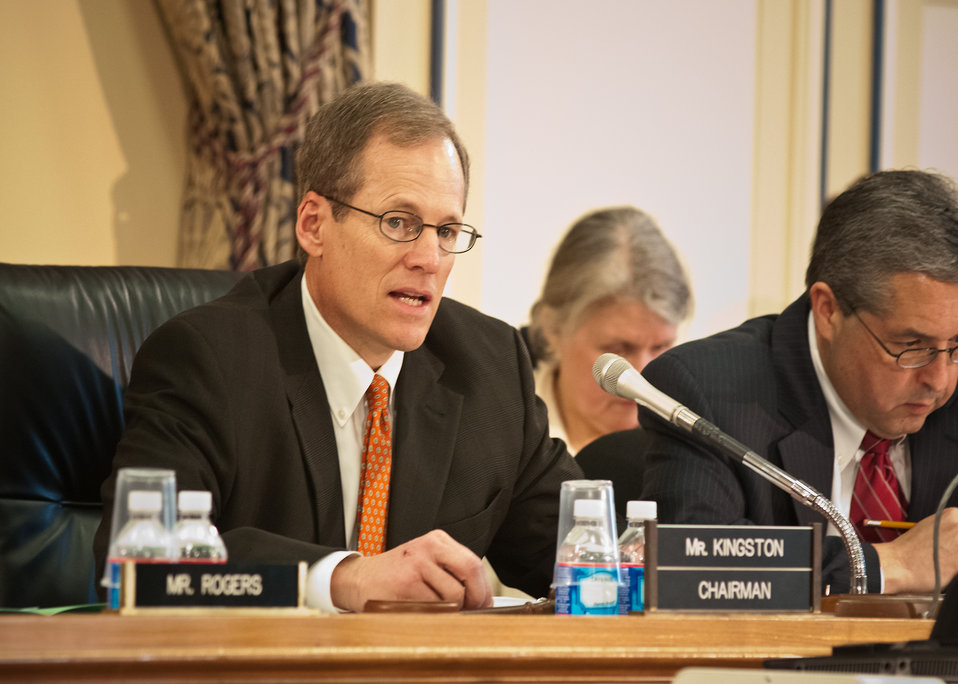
Congressman Jack Kingston, Georgia, Chairman of the House Agriculture Appropriations Committee welcomes Agriculture Secretary Tom Vilsack, Dr. Kathleen Merrigan, Deputy Secretary, Dr. Joseph Glauber and Chief Economist and Michael Young Budget Officer prior to discussing the United States Department of Agriculture budget in the Rayburn House Office Building on Friday, February 17, 2012 in Washington, D.C.